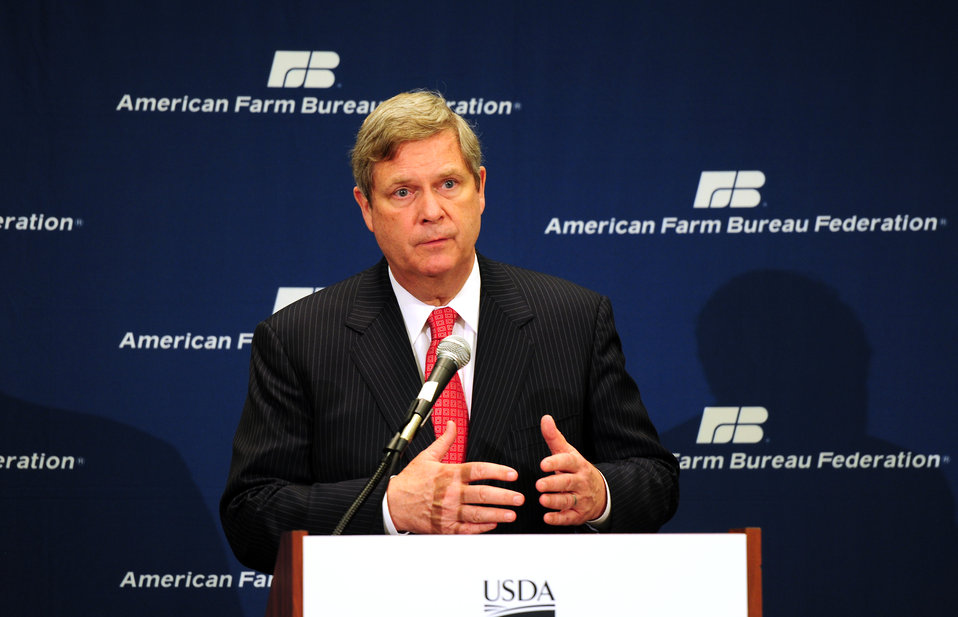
Agriculture Secretary Tom Vilsack presents USDA's Blueprint for Stronger Service, a plan to Increase Efficiency in USDA Operations, on Monday, January 9, 2012 in Honolulu, Hawaii.